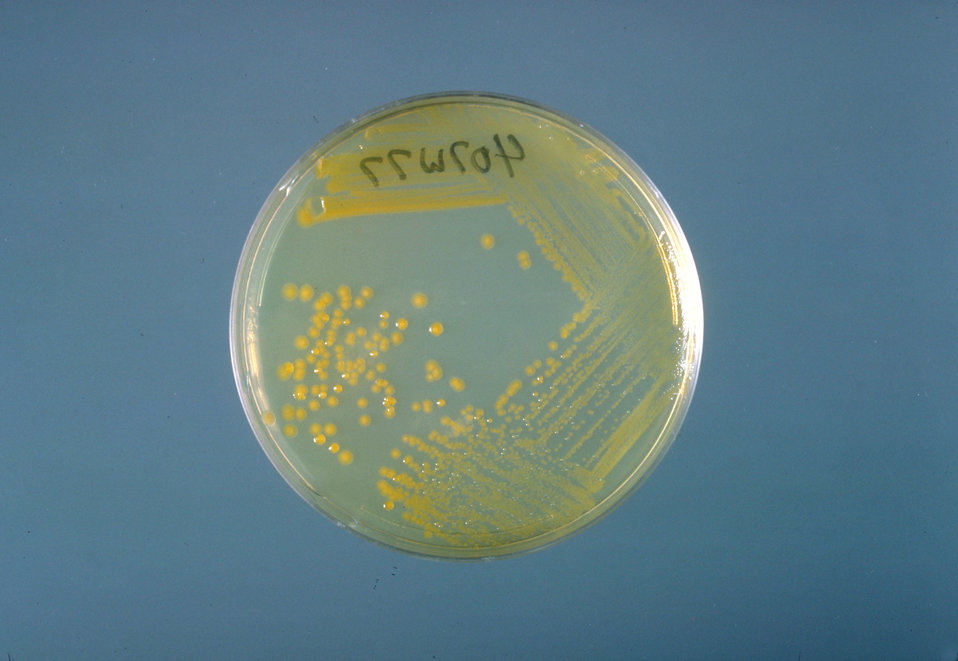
This is a trypticase soy agar plate culture of Enterobacter sakazakii after three days of growth at 25� C.